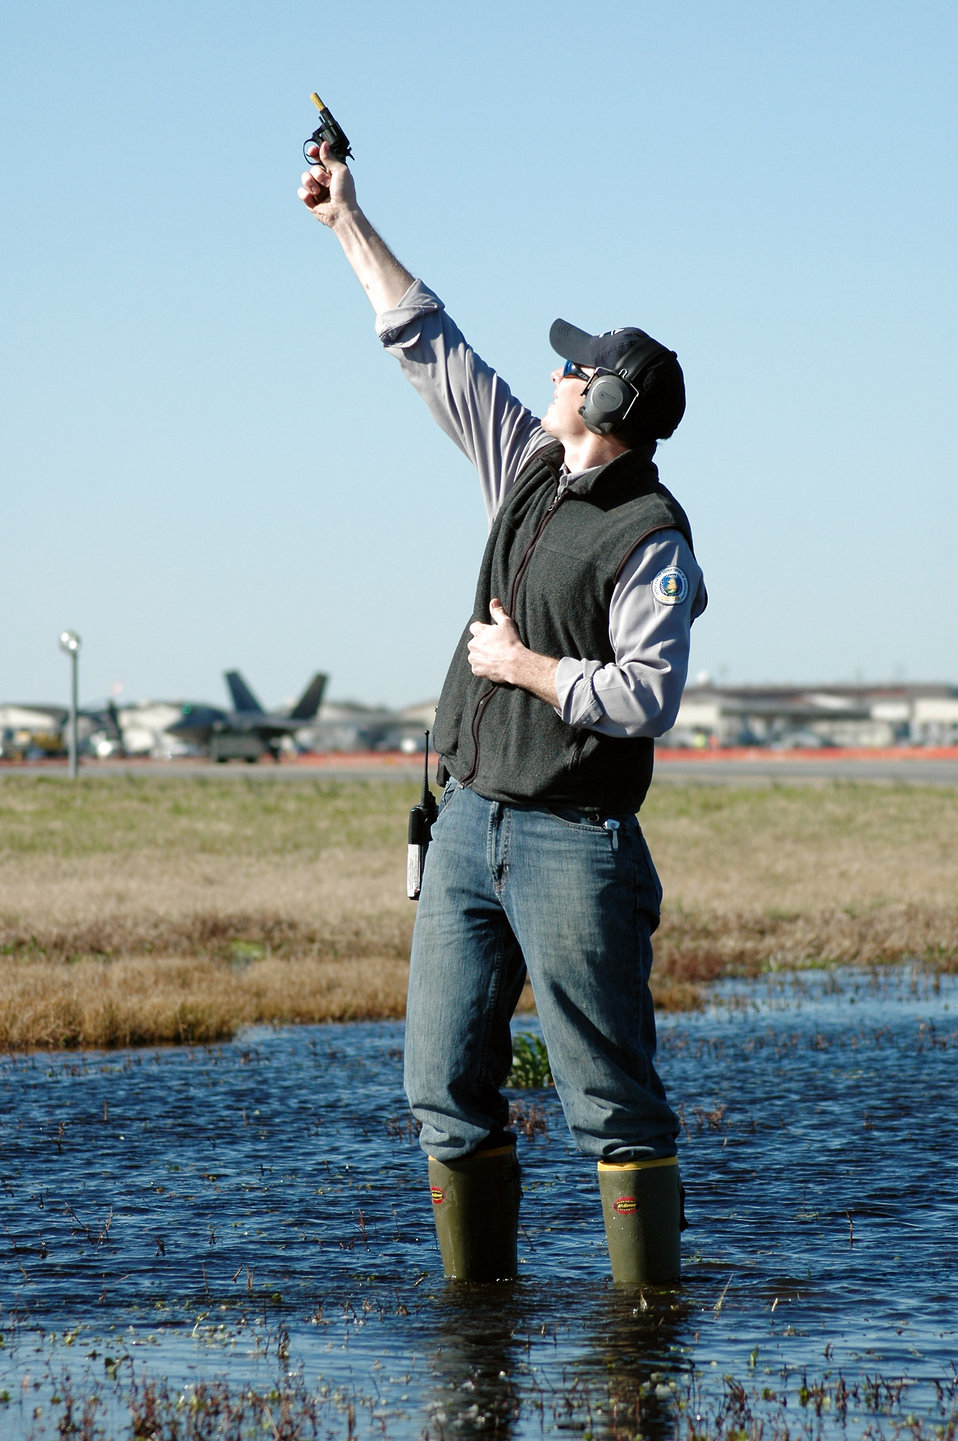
Langley officials fight to keep F-22s from being damaged

Tom Olexa shoots pyrotechnics in front of the runway here to disperse a flock of birds before a pair of F-22 Raptors (background) take off March 5 at Langley Air Force Base, Va. Wet areas around the runway attract all sorts of wildlife, including birds, which pose a hazard to launching aircraft. Mr. Olexa, a U.S. Department of Agriculture wildlife biologist, works with the 1st Fighter Wing's Bird and Wildlife Aircraft Strike Hazard team.